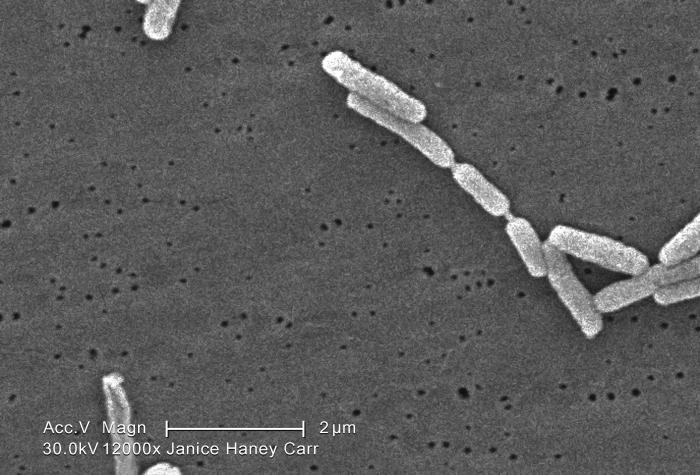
Under a high magnification of 12000X, this scanning electron micrograph (SEM) depicted a small grouping of Gram-negative Legionella pneumophila bacteria. Please see PHIL 11092 through 11152 for additional SEMs of these organisms, specifically PHIL 11124 for a colorized version of this image. It appears that a few are still joined to one another just prior to the completion of their reproductive process known as cell division. In some of these views you'll note the presence of flagellar appendages.